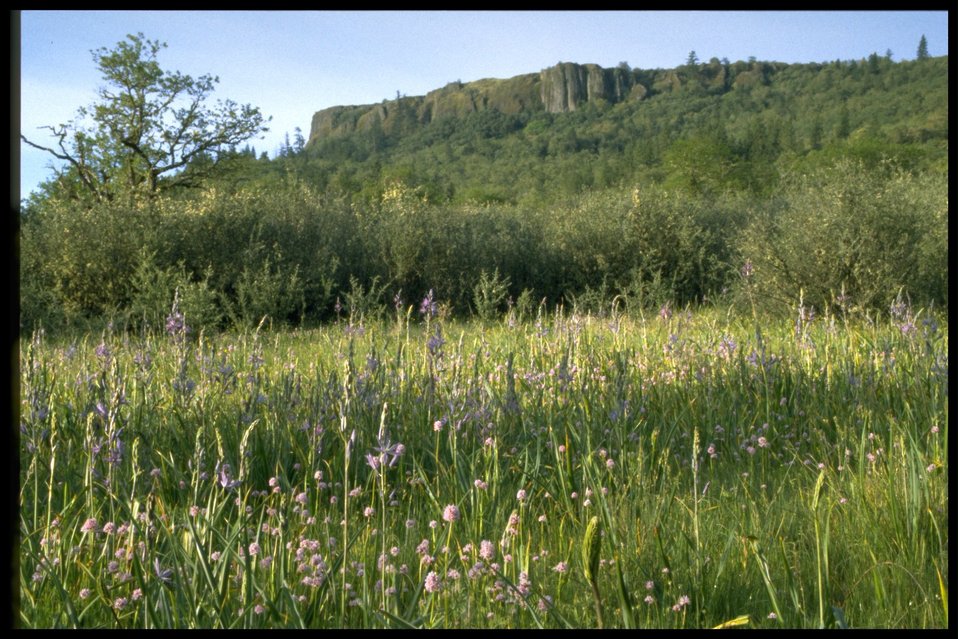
Farshot of Camasia quamash, Plectritis congesta, Ceanothus cunetatus.